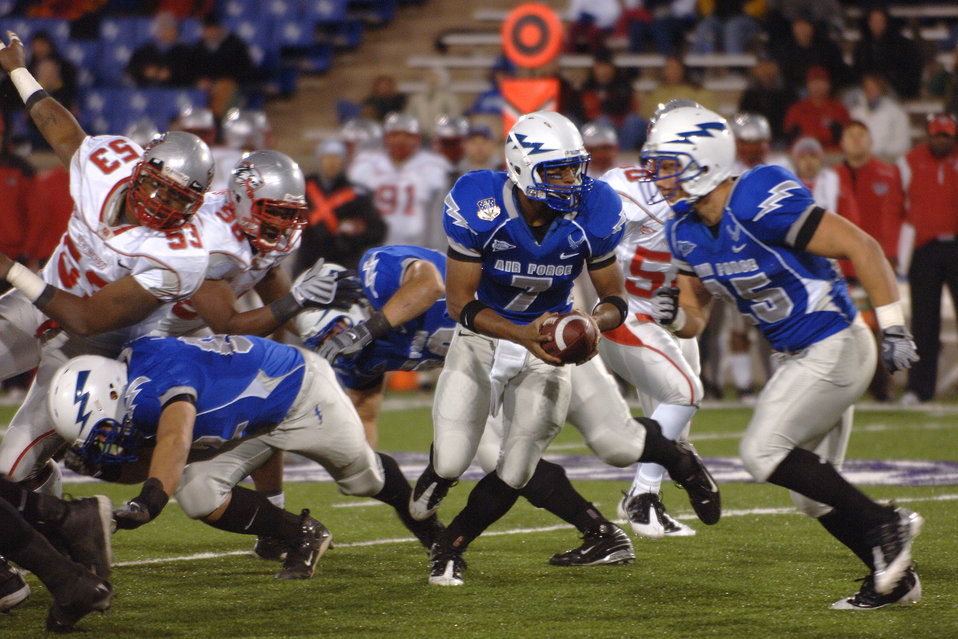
Football: Opportunistic Falcons topple New Mexico

The Air Force rushing attack unfolds with Falcon lineman taking out defenders as freshman quarterback Tim Jefferson looks to handoff to one of his backs coming out of the Power-I formation, and with fullback Todd Newell working as a lead blocker. Going into the Oct. 23 game against New Mexico, the Air Force rushing attack was third in the nation, averaging 300.4 yards per game. Jefferson led the run-heavy Falcons offense to 227 yards rushing and a 1-yard touchdown pass in a 23-10 win over New Mexico Oct. 23 at Falcon Stadium in Colorado.